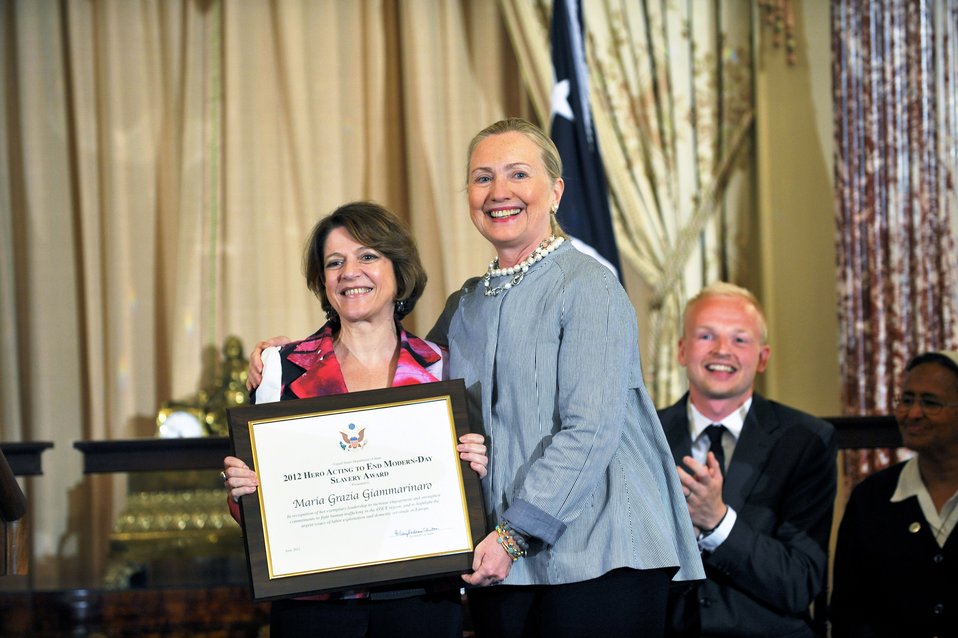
Secretary Clinton With TIP Hero Maria Grazia Giammarinaro

U.S. Secretary of State Hillary Rodham Clinton honors Maria Grazia Giammarinaro of Italy, a 2012 Trafficking in Persons (TIP) Report Hero, at the U.S. Department of State in Washington, D.C., on June 19, 2012.